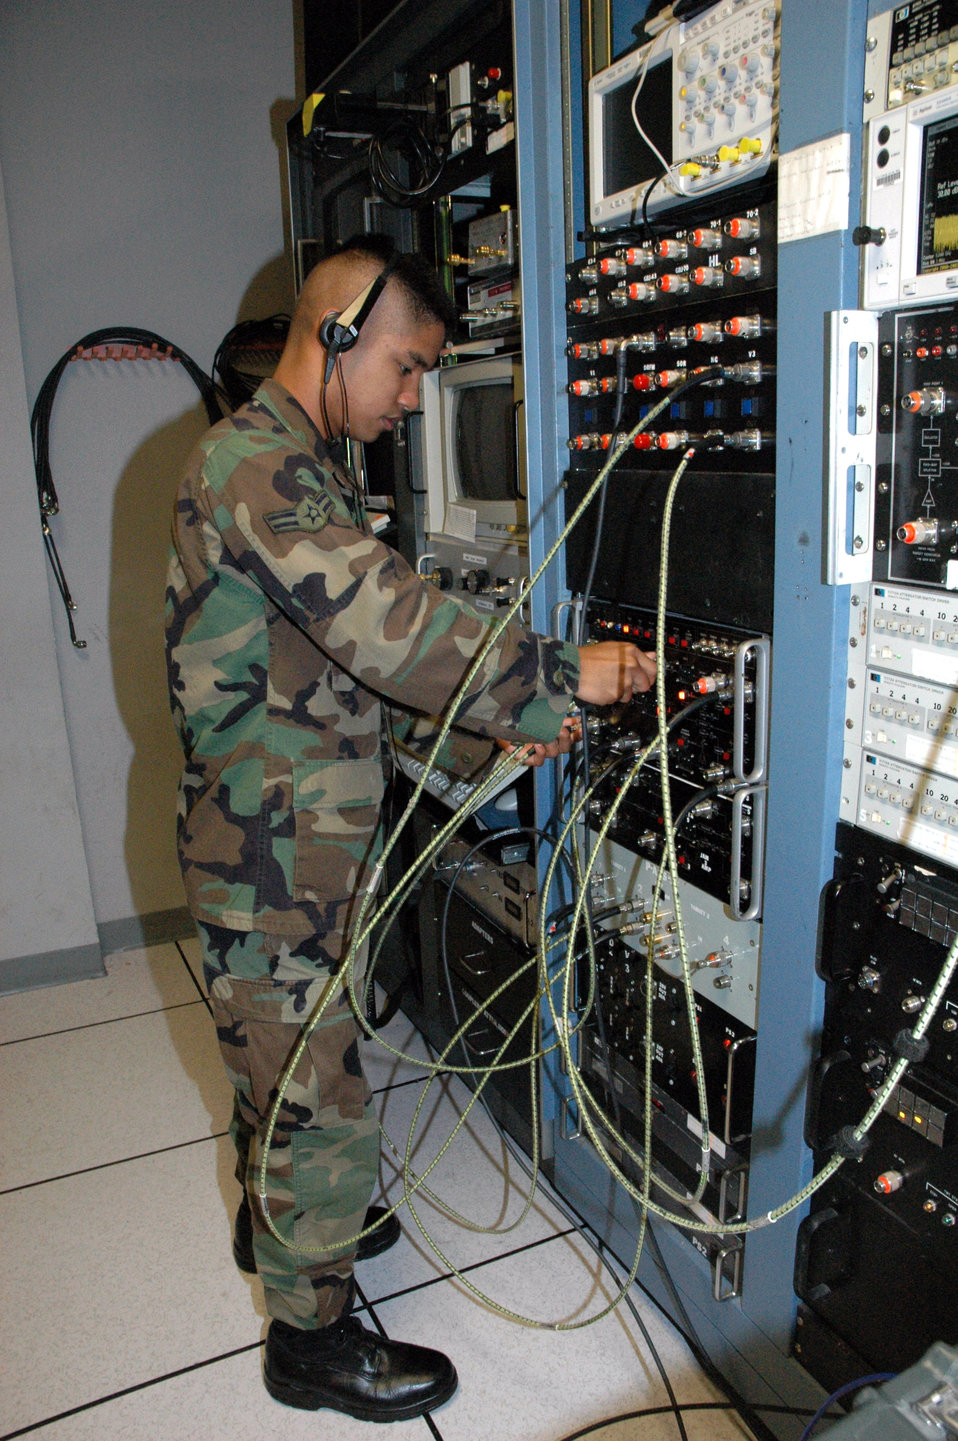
Engineers go beyond virtual reality to test systems

Airman 1st Class Allan Robillos ensures radio frequency-signal connections are correct on the electronic countermeasures attack suite at Tyndall Air Force Base, Fla. Airman Robillos is an electronic warfare technician.